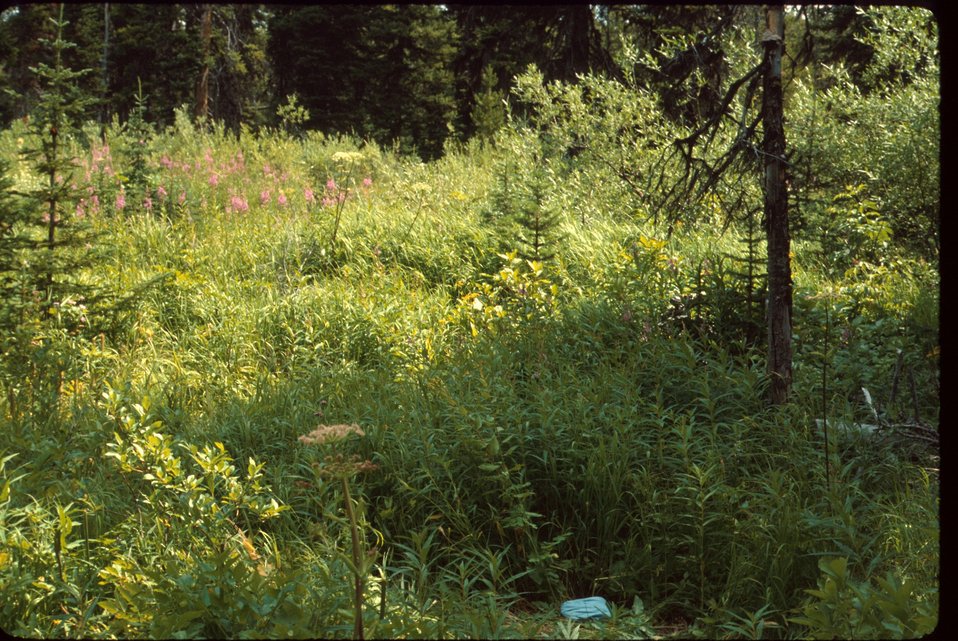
Habitat, Moonwort Wildflower